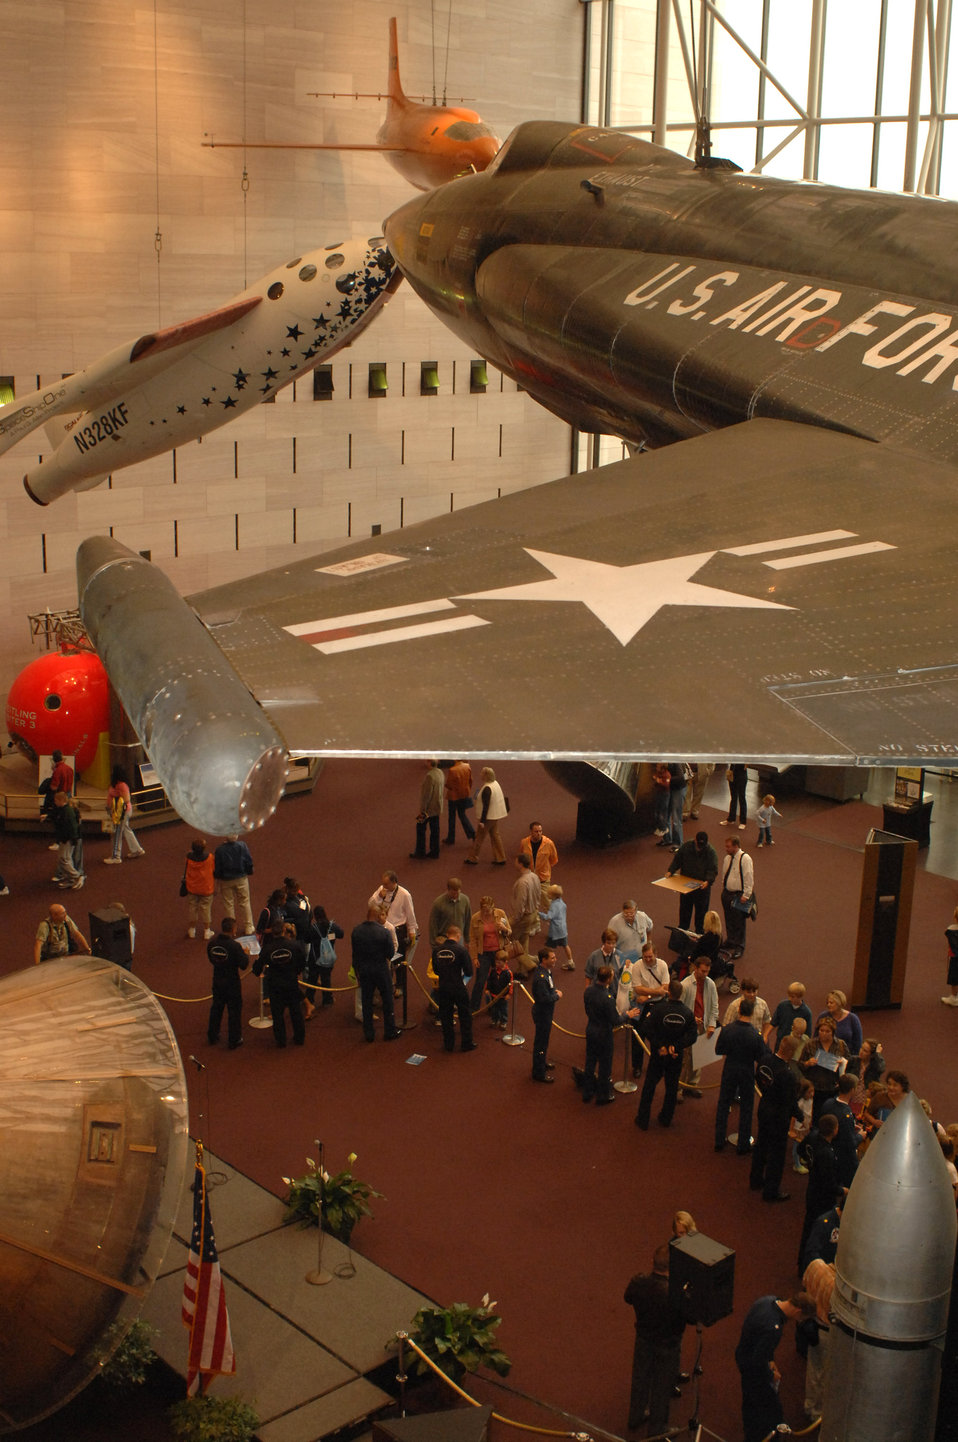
Thunderbirds visit Smithsonian Air and Space Museum

The Air Force Thunderbirds demonstration team was at the Smithsonian Air and Space Museum Oct. 11 in Washington, D.C. Team members signed autugraphs and were at the Smithsonian as part of a week-long series of events that will culminate with the opening of the Air Force Memorial Oct. 14.